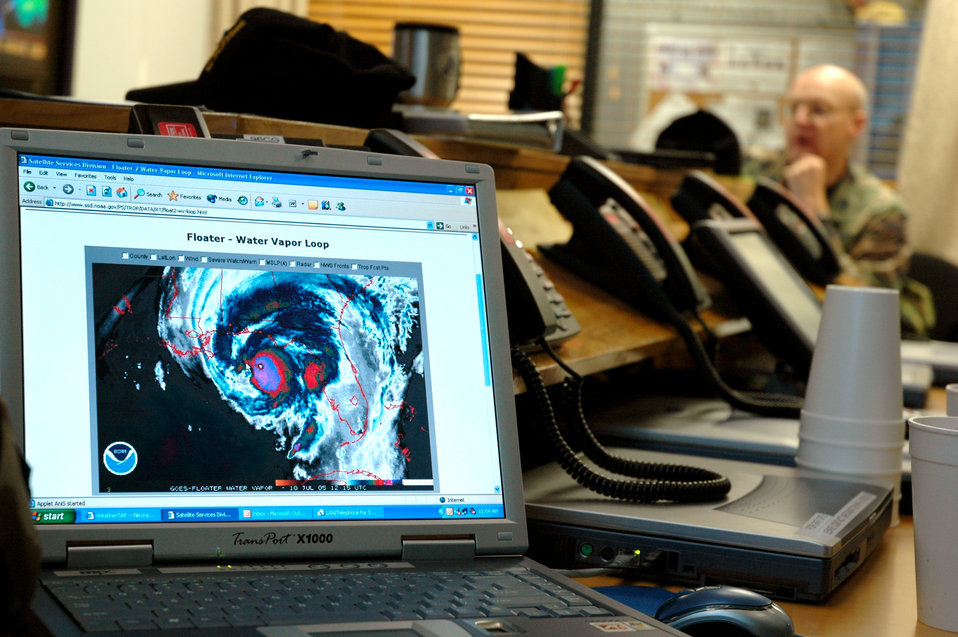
Eglin spared as Hurricane Dennis flexes

EGLIN AIR FORCE BASE, Fla. -- Airmen from the 46th Weather Squadron's monitored Hurricane Dennis from the time it was named a hurricane in the Caribbean. The hurricane passed over the base July 10 but caused no major damages.